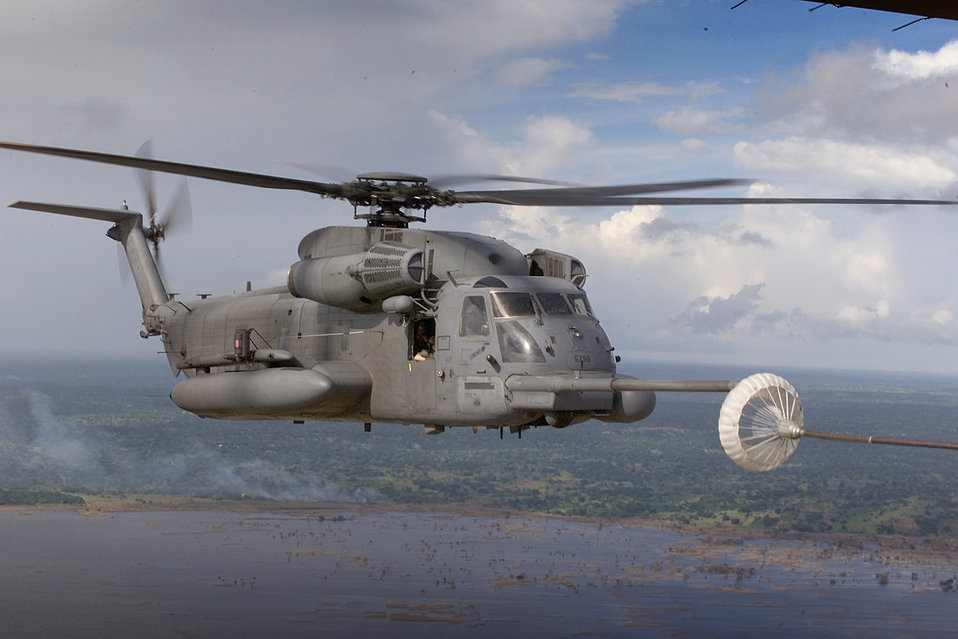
Atlas Response

FILE PHOTO -- An MH-53M Pave Low IV helicopter assigned to the 21st Special Operations Squadron, Royal Air Force Mildenhall, England, flies over flooded Central Mozambique near the town of Chibuto as it refuels from an MC-130P